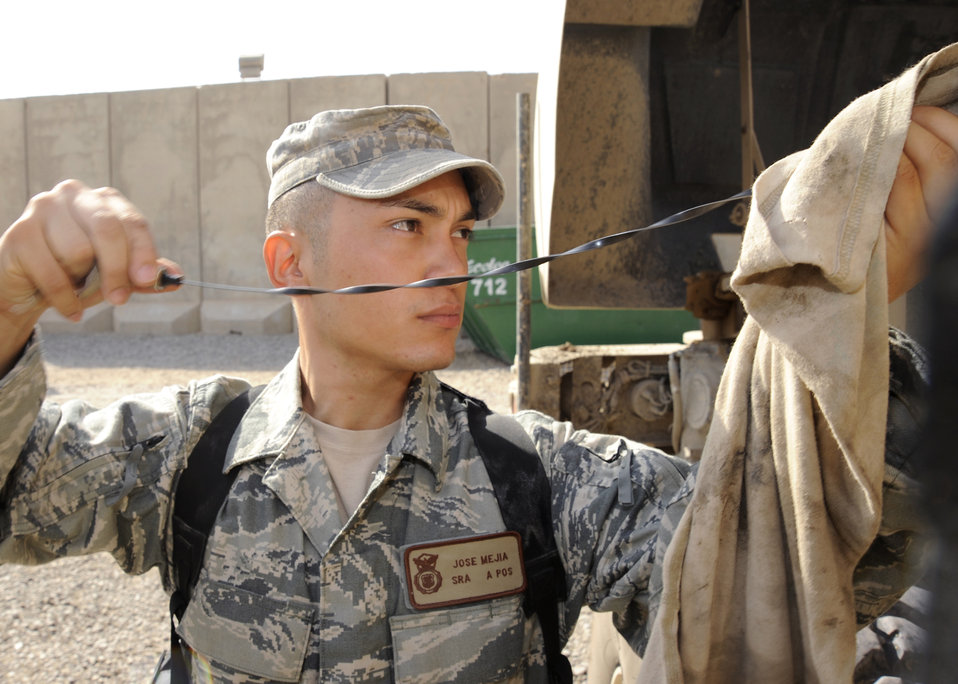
Security forces Airmen help secure future of Iraq

Senior Airman Jose Mejia performs maintenance checks on a mine-resistant, ambush-protected vehicle Aug. 22, 2009, at Camp Stryker, Iraq. His responsibility as a driver is to ensure the MRAP vehicle is ready to get his team to their destination safely while performing outside-the-wire combat support. Airman Mejia is assigned to the 732nd Expeditionary Security Forces Squadron Detachment 2 Police Transition Team, and deployed from Ramstein Air Base, Germany, and is a native of Fort Lauderdale, Fla.